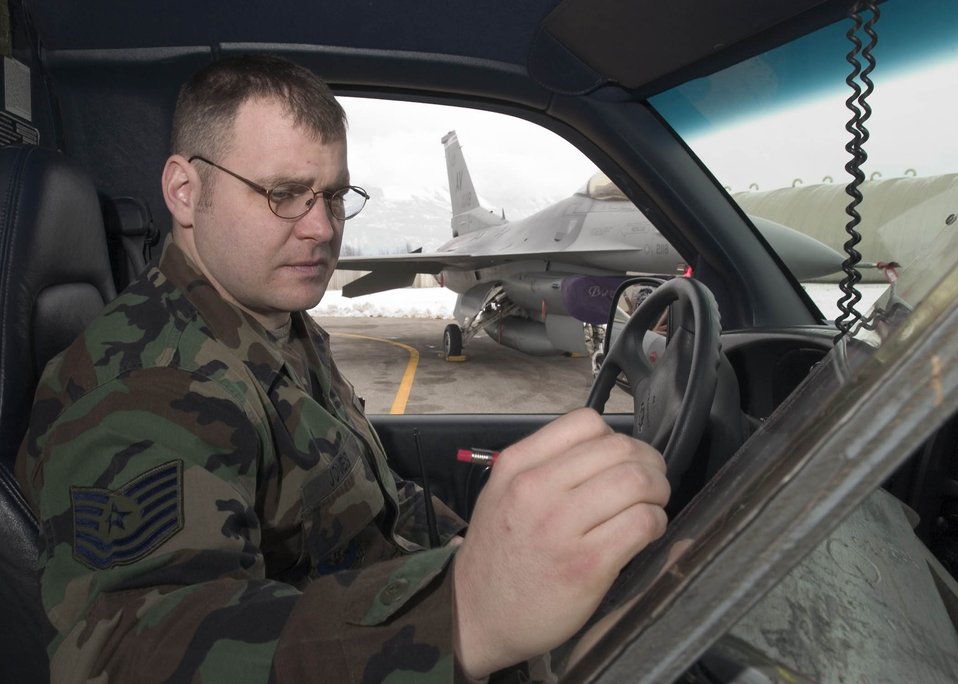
Frozen Falcons

AVIANO AIR BASE Italy -- Tech. Sgt. Clay Jones keeps track of F-16 Fighting Falcons' status here. He is a job expediter assigned to the 31st Aircraft Maintenance Squadron.